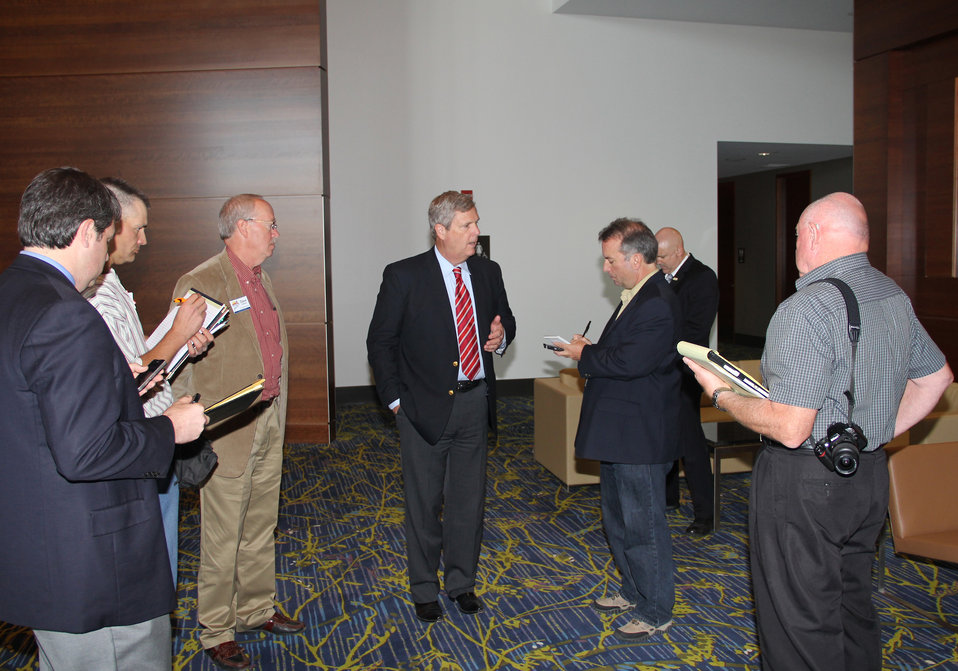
Agriculture Secretary Tom Vilsack talks with reporters at the rally for Iowa’s Outdoor Legacy event in Des Moines, IA on Saturday, Sept. 29, 2012. The event included several speakers and panelists who highlighted challenges and opportunities for conservation in Iowa, as well as lessons learned around the country and world. Secretary Vilsack’s comments focused on the important role conservation plays in helping build a stronger rural America through better care for the environment and improved economic opportunities.